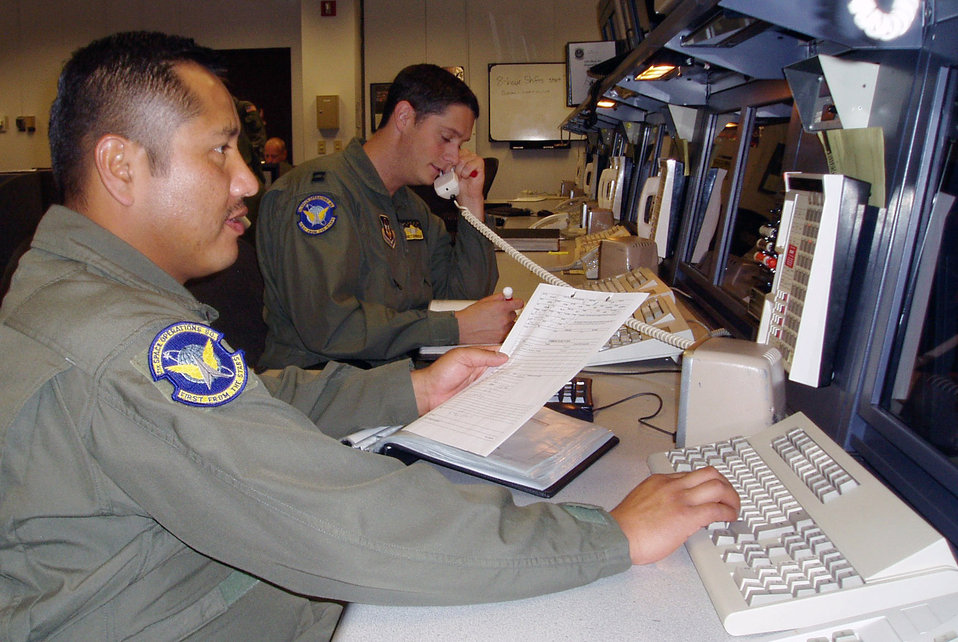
Reserve establishes first space wing

Tech. Sgt. Juan Gutierrez (left) and Capt. Garrett Donnelly, both of the 7th Space Operations Squadron, check on the status of a satellite to ensure it is operating within normal parameters. They are among the reservists who will become part of the new 310th Space Wing when it is activated March 7 at Schriever Air Force Base, Colo.